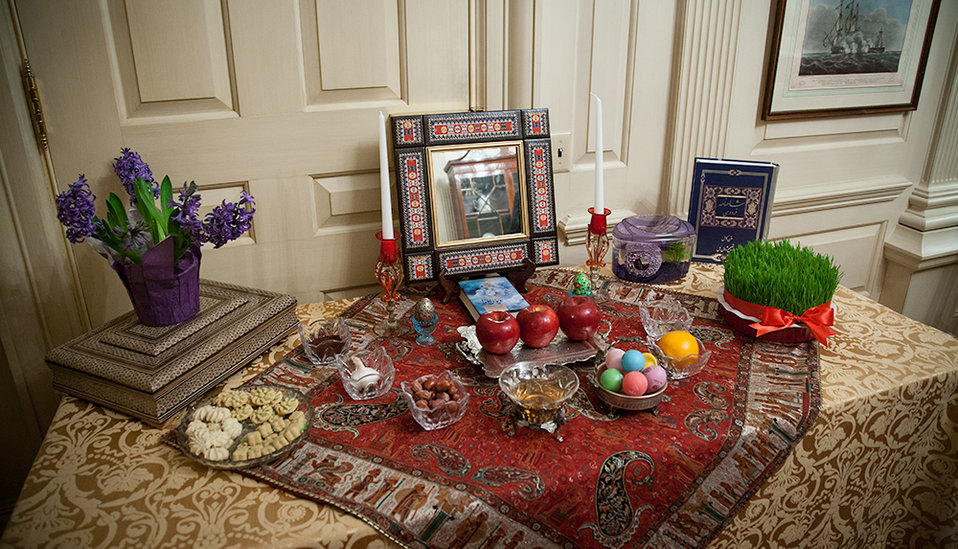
Secretary Kerry's Haft Seen Sofreh

U.S. Secretary of State John Kerry joins President Obama in wishing the people of Iran and all those who celebrate around the world -- from East Asia to the Persian Gulf region -- a happy, healthy, and prosperous Nowruz on March 20, 2014. The photograph shows Secretary Kerry's Haft Seen Sofreh outside his office at the U.S. Department of State in Washington, D.C.